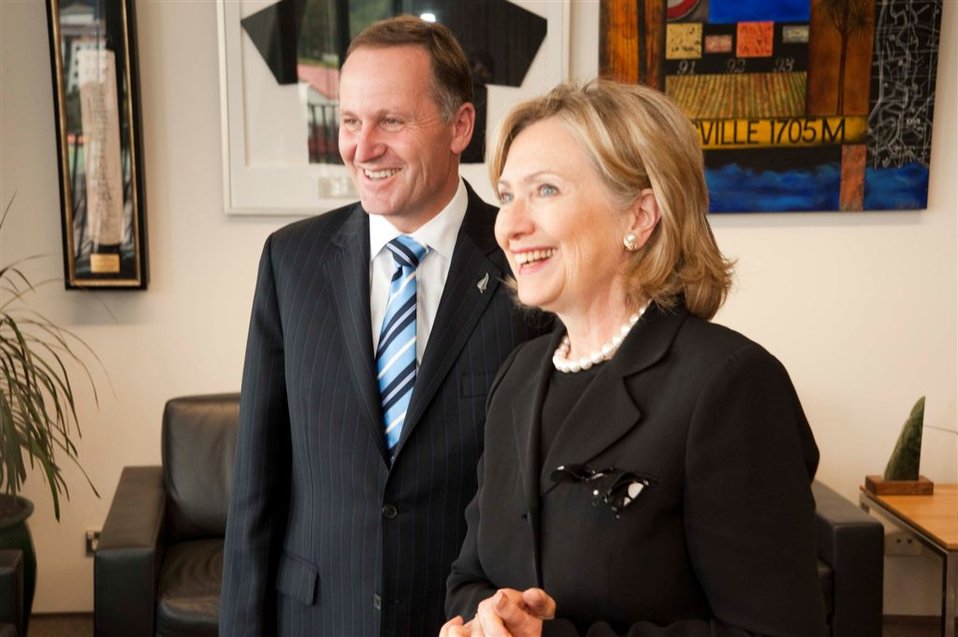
Secretary Clinton Speaks With New Zealand Prime Minister Key

U.S. Secretary of State Hillary Rodham Clinton speaks with New Zealand Prime Minister John Key in the Prime Minister's office in Wellington, New Zealand, on November 4, 2010.